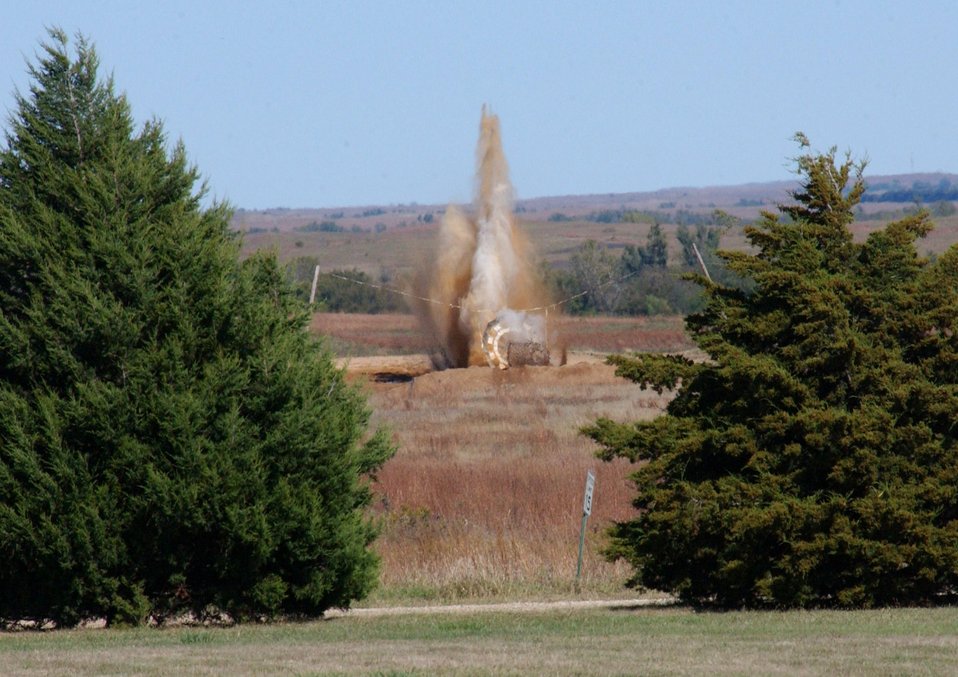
Bullet impact

Thirty-millimeter bullets fired from an A-10 Thunderbolt II impact a strafe pit at the Smoky Hill Range near Salina, Kan., Oct. 16. Fourteen A-10 squadrons from across the Air Force competed in Hawgsmoke 2008 Oct. 14 to 18. Hawgsmoke is a biennial A-10 bombing and aerial gunnery competition, which was hosted this year by the 442nd Fighter Wing, an Air Force Reserve unit based at Whiteman Air Force Base, Mo.